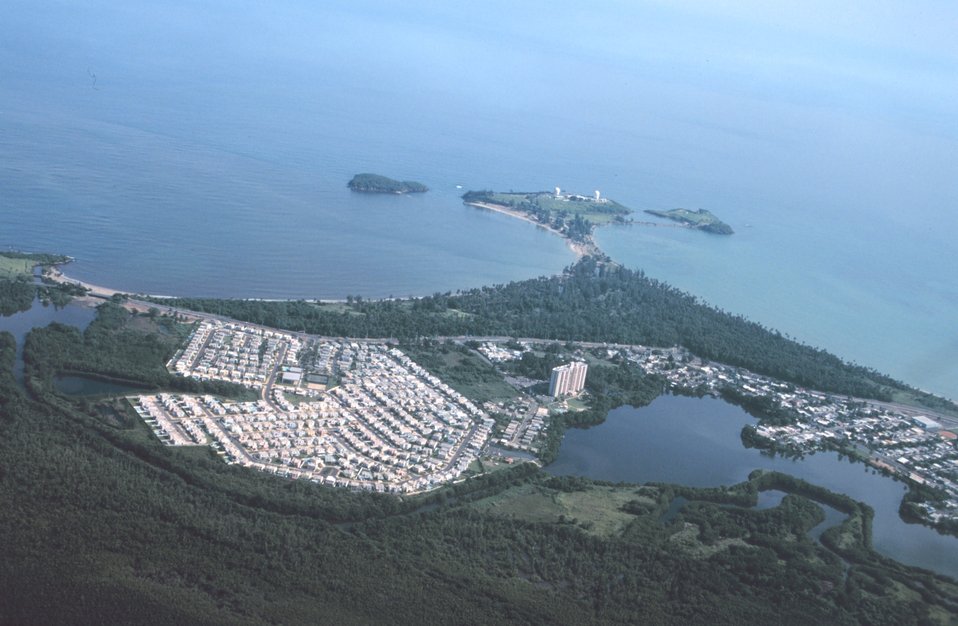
A builtup area near San Juan, looking north to the Atlantic Ocean